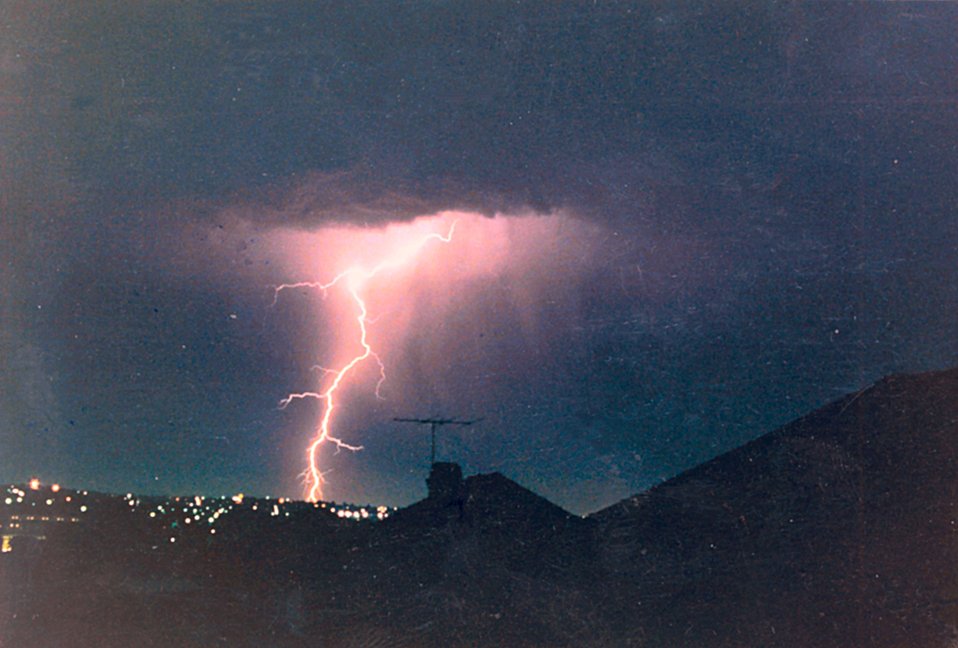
Many of Mr. Lear's lightning photographs are taken from the roof of his home. He has an array of six cameras that can be activated simultaneously in order to capture lightning images. These six cameras span the horizon. Mr. Lear is a welder by trade and has taken lightning photographs for many years as a hobby.